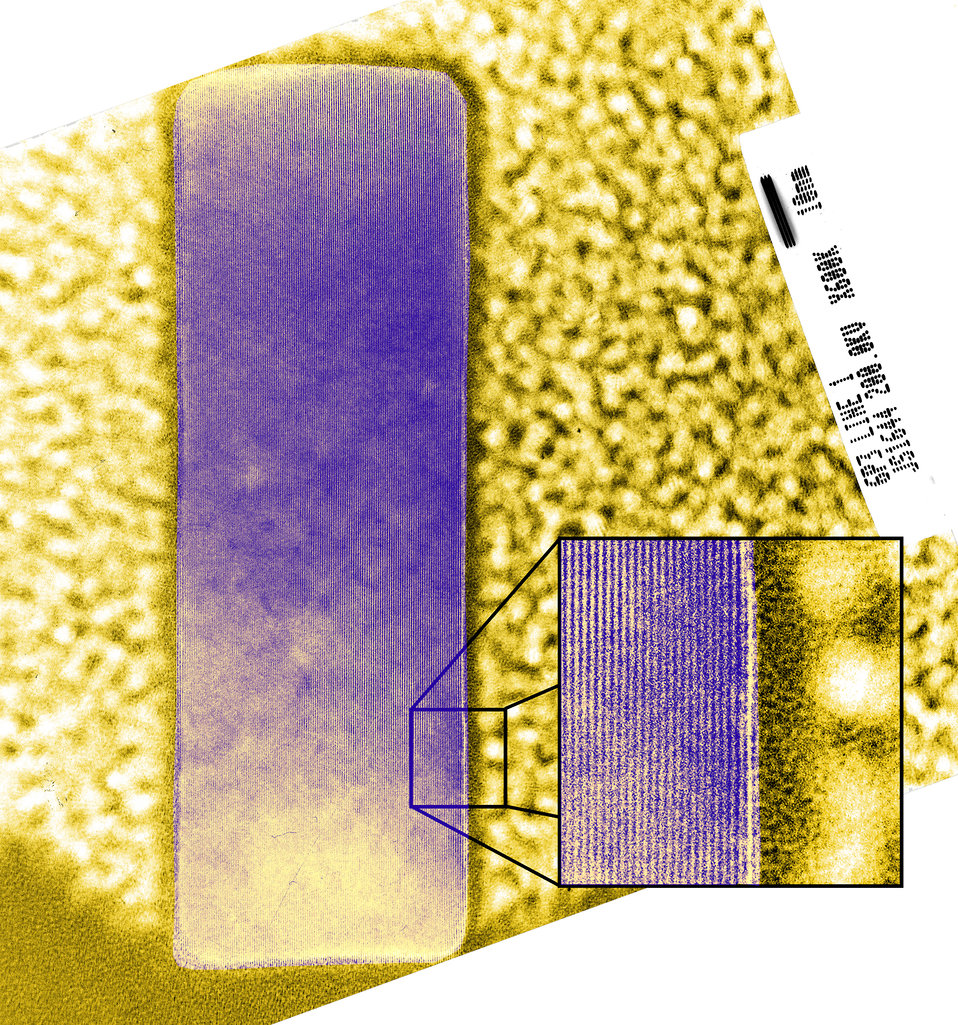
Planes of Silicon

The large purple rectangle in this colorized image is a chip feature about 40 by 150 nanometers in size, surrounded by encapsulating material. The magnified section shows the planes of silicon atoms used to calibrate feature measurements.